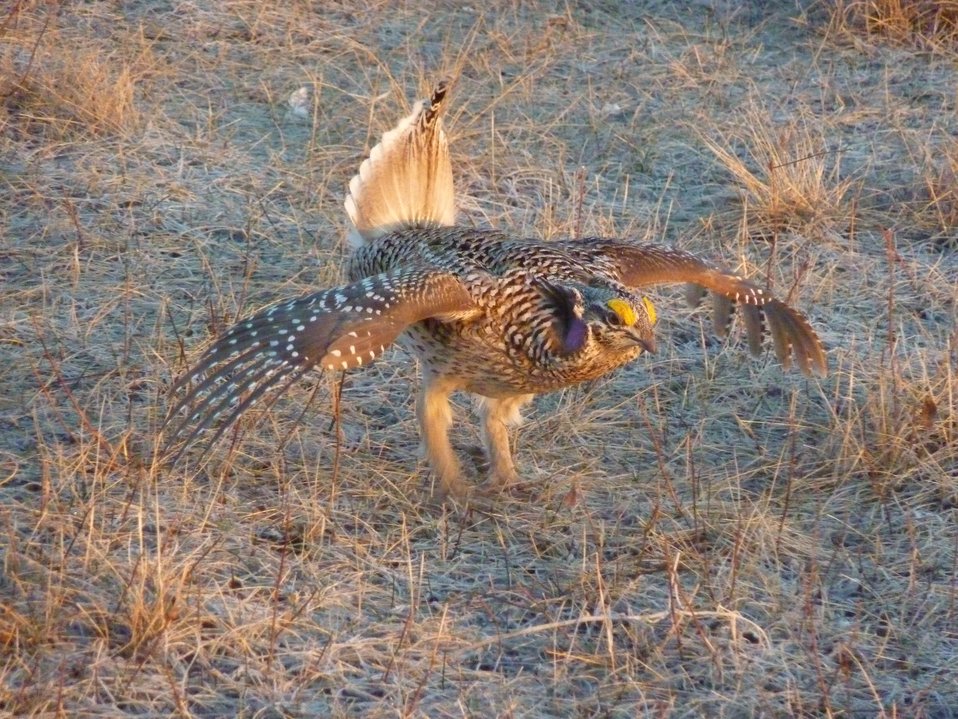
Sharp-tailed grouse courtship dancing is a very popular attraction in the spring at Upper Souris National Wildlife Refuge.